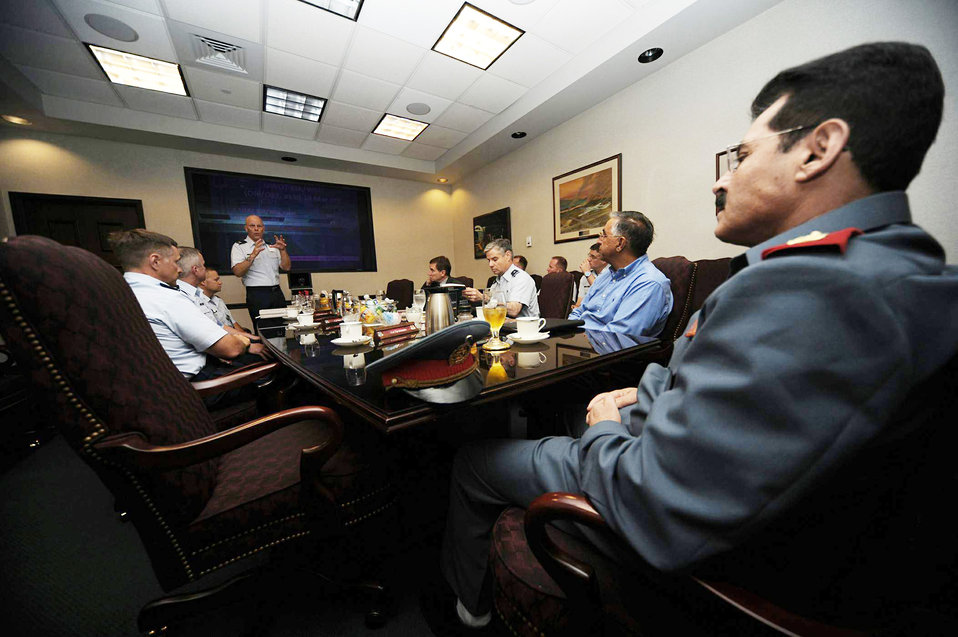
Afghan air corps commander calls Expeditionary Center a 'role model' for training

Col. Murrell Stinnette provides a mission brief to Afghan Maj. Gen. Mohammad Dawran through interpretation by M. Monir Rafiq July 13 at the Expeditionary Center on Joint Base McGuire-Dix-Lakehurst, N.J. General Dawran, commander of the Afghanistan National Army Air Corps, visited the installation to learn more about the Air Education and Training Command's Air Adviser Course housed at the Expeditionary Center on Fort Dix. Colonel Stinnette is the Air Force Expeditionary Center vice commander.